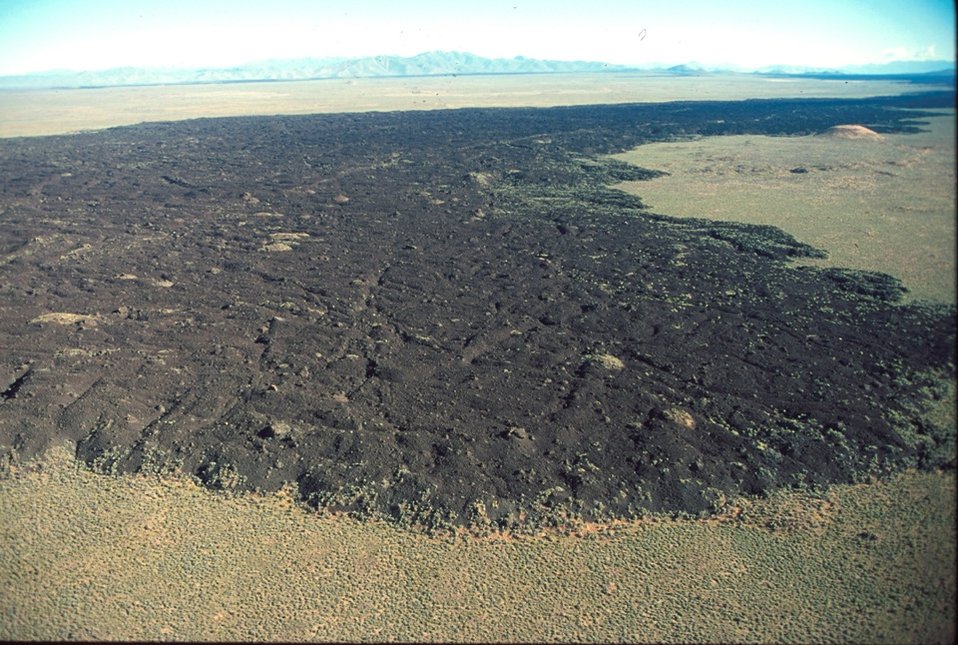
Craters of the Moon National Monument Shoshone Field Office USRD Upper Snake River District